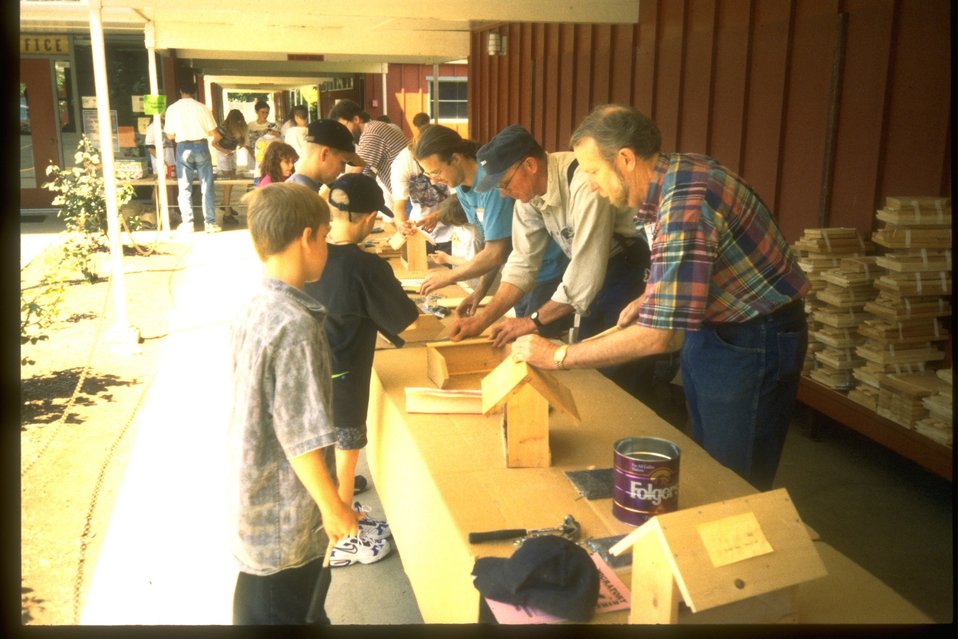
International Migratory Bird Day is being celebrated with a picnic.